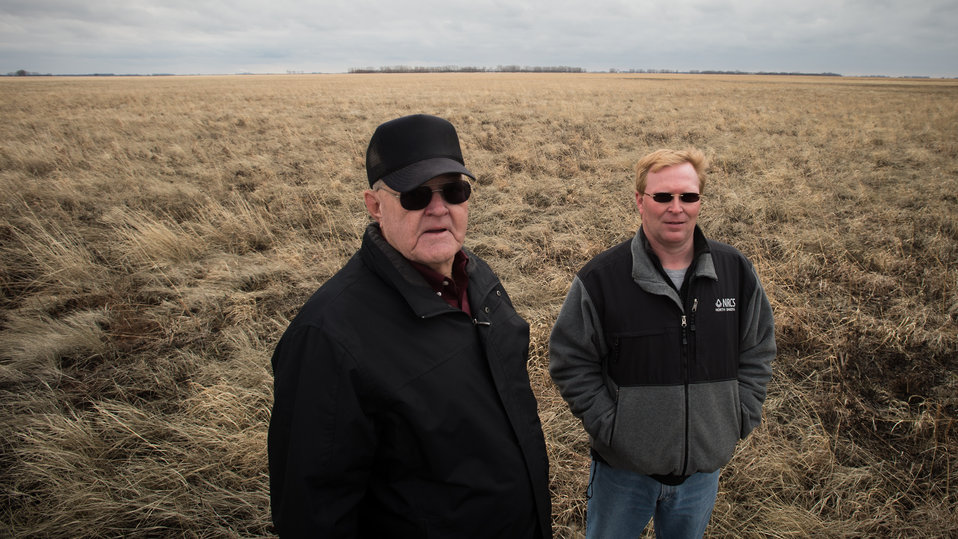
Farmland owner and U.S. Department of Agriculture (USDA) Natural Resources and conservation Service (NRCS) Emergency Watershed Protection (EWP) program –Flood Plain Easements (FPE) participant Neil Hanson, left, and Natural Resources Conservation Service District Conservationist Chris Nelson, standing on Hanson's flood plain easement, Wednesday May 1, 2013. To learn about the Red River Basin Initiative, see www.mn.nrcs.usda.gov/news/features13/RRBI.html.